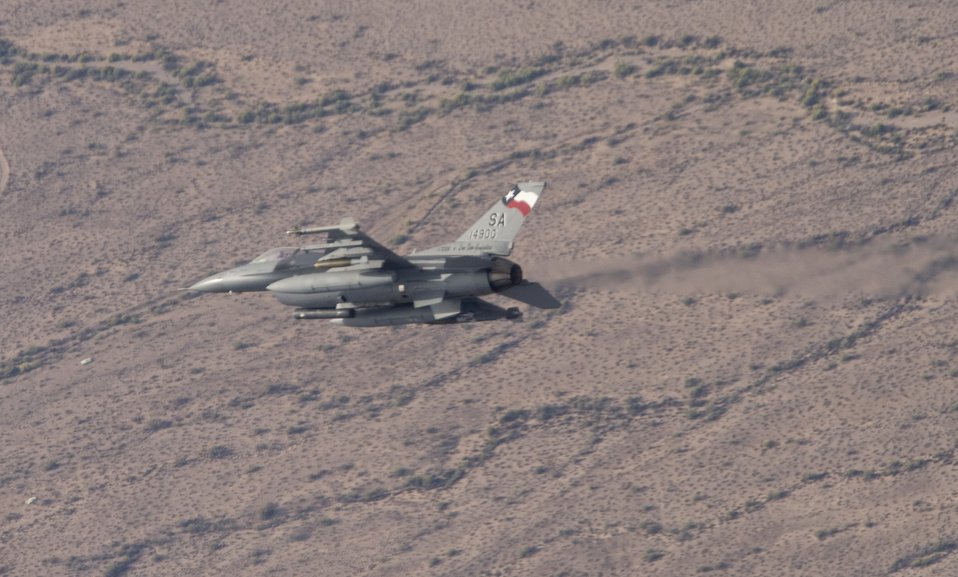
Airmen train next generation

A student pilot with the 149th Fighter Wing maneuvers his F-16 Fighting Falcon into the target area during live munitions drops on the Barry Goldwater Bombing Range April 24 near Tucson, Ariz.